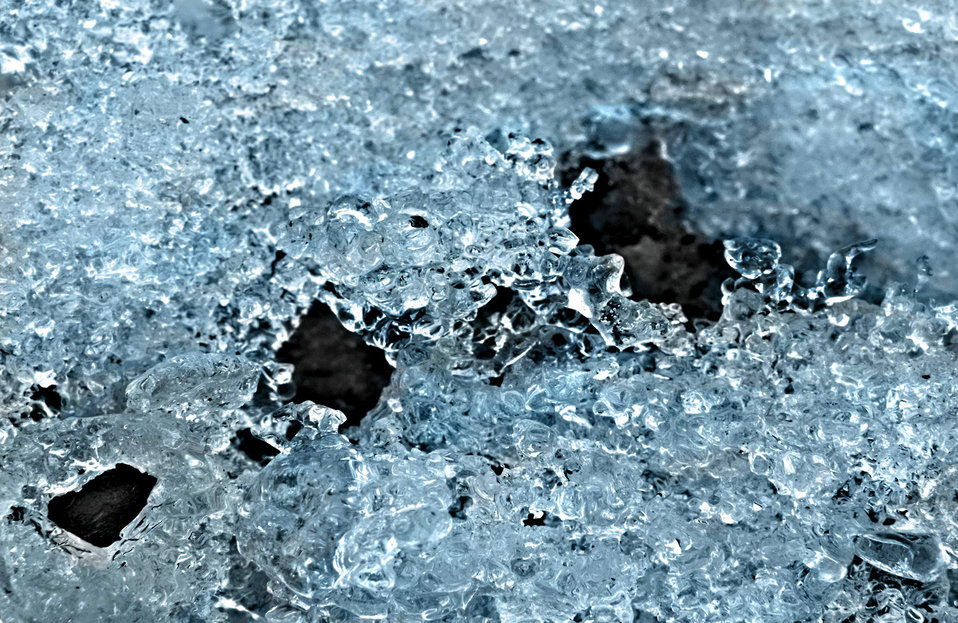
Blue ice

Close up of ice in winter.